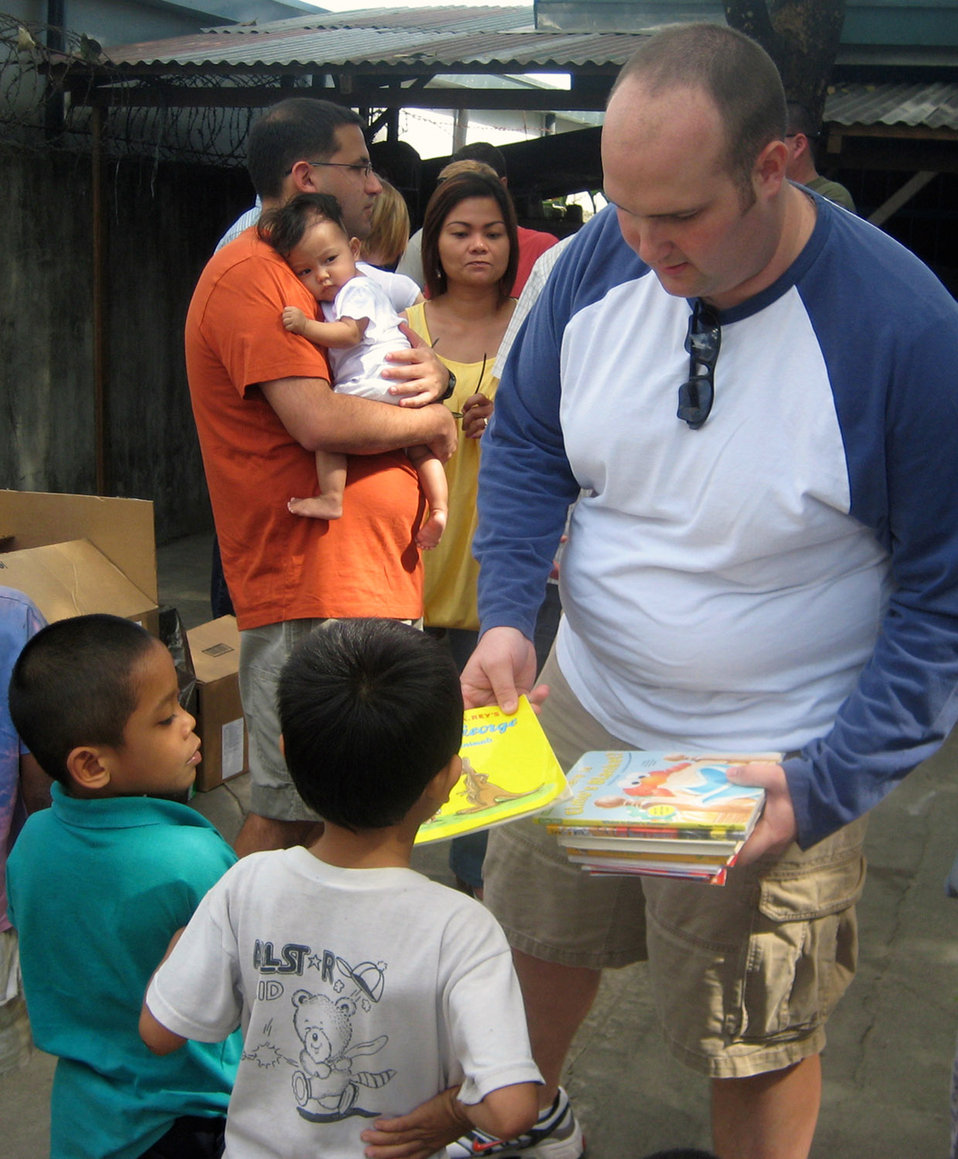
Kadena Airmen visit orphanage in Philippines

Capt. Matt Halladay passes out books to children Jan. 19 at the Duyan ni Maria orphanage in Angeles City, Pampanga in the Philippines. Members of the 17th Special Operations Squadron, 353rd Operations Support Squadron and 25th Intelligence Squadron Det. 3 stopped by the orphanage and single mothers home with boxes of clothing, shoes, toys, books and school supplies. Captain Halladay is a 17th SOS navigator.